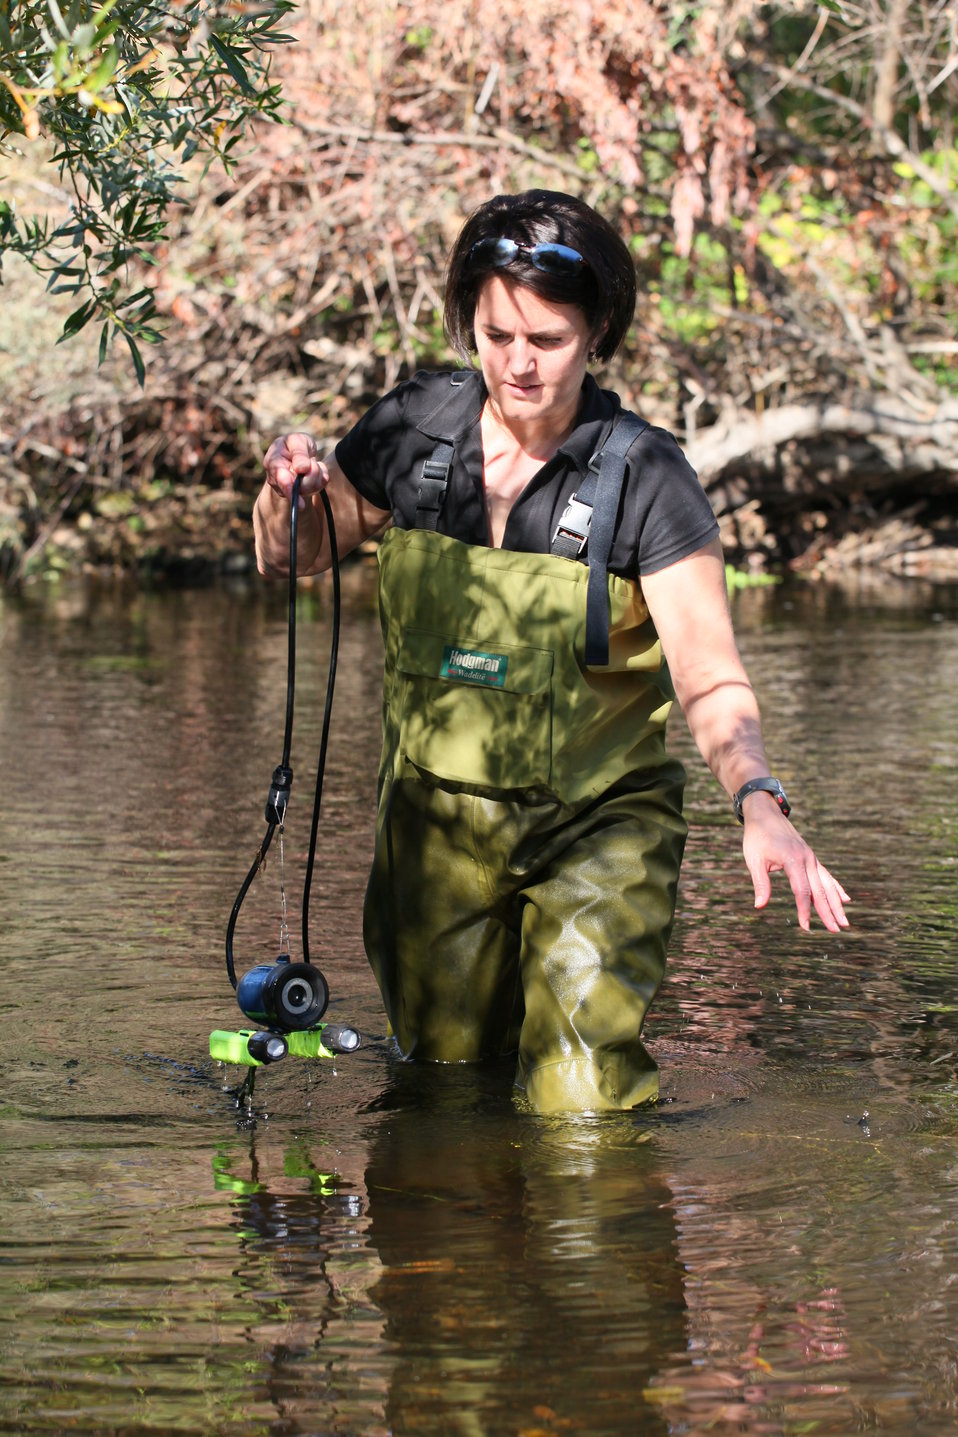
A river full of education

Dr. Stacy Luthy, a professor of biology with the University of the Pacific, lifts an underwater video camera from the Calaveras River near the New Hogan Dam, Valley Springs, Calif., Oct. 22, 2011. Luthy was demonstrating underwater views of fish habitat to students from Stagg and Bear Creek high schools of Stockton, Calif., during the Calaveras River Education and Appreciation Day. The U.S. Army Corps of Engineers Sacramento District helped in hosting the in event, in partnership with the U.S. Fish & Wildlife Service’s “Connecting People with Nature” program.